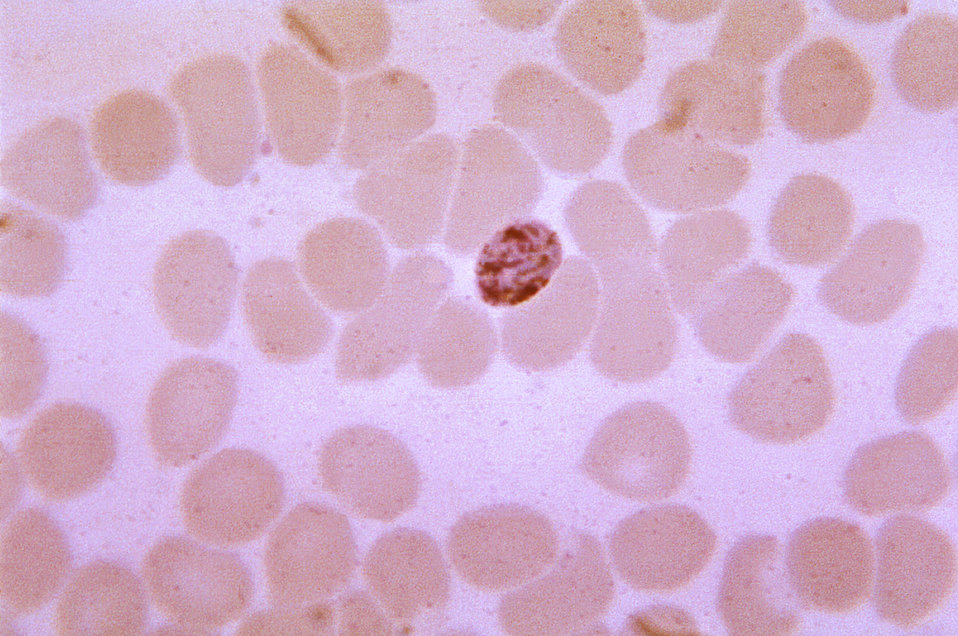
This thin film blood smear micrograph depicts an immature Plasmodium malariae schizont, displaying four cytoplasmic chromatin masses.